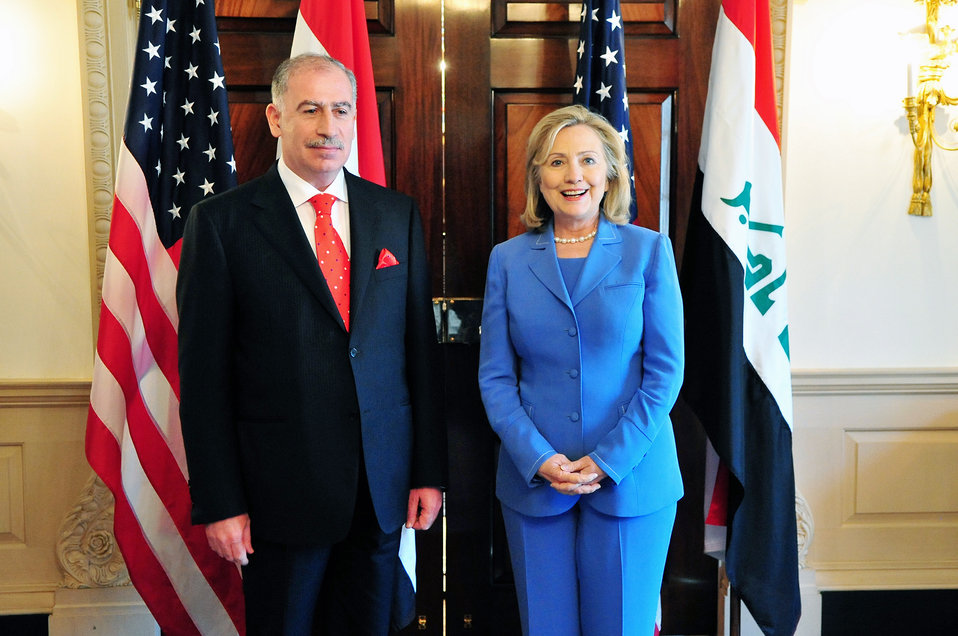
Secretary Clinton Meets With Iraqi Parliament Osama al-Nujaifi

U.S. Secretary of State Hillary Rodham Clinton meets with Osama al-Nujaifi, Speaker of the Iraqi Parliament, at the U.S. Department of State in Washington, D.C., on June 24, 2011.